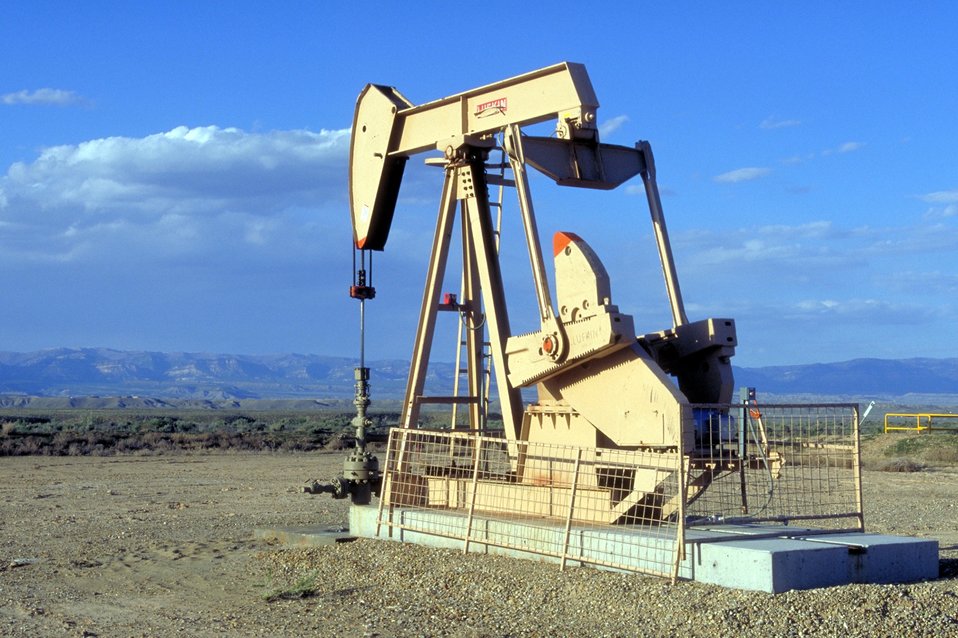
Pump unit producing coal bed methane near Price, Utah.